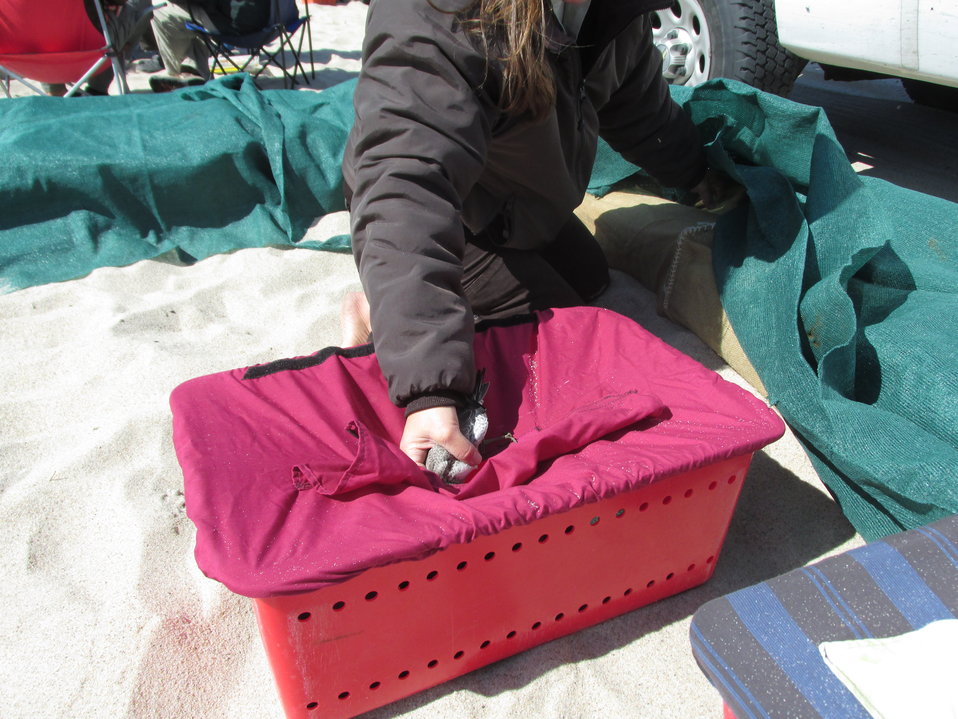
Red knot cannon netting in Cape Cod

Biologist Stephanie Koch pulls a red knot from a carrying case to place it into an area where it can run around while waiting to be banded.